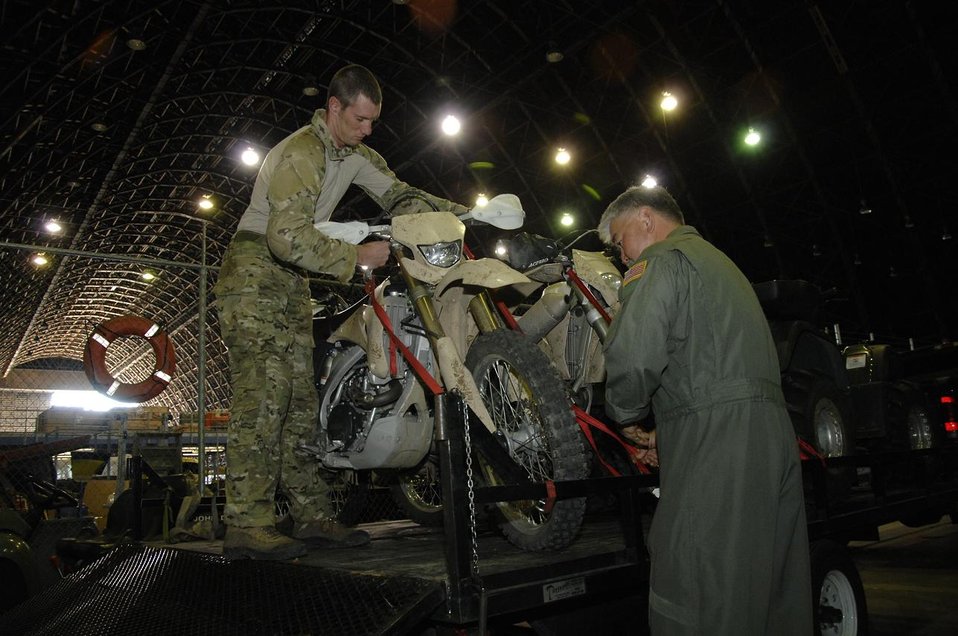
Guard members assist car accident victim

Technical Sgt. Sean Kirsch and Senior Master Sgt. Larry Hiyakumoto prepare a set of all-terrain motorcycles for routine inspection March 10 at Moffett Federal Airfield, Calif. Sergeants Kirsch and Hiyakumoto used their specialized life saving skills to assist an accident victim March 9 near Suisun, Calif. Sergeants Kirsch and Hiyakumoto are pararescuemen from the 131st Rescue Squadron of the California Air National Guard.